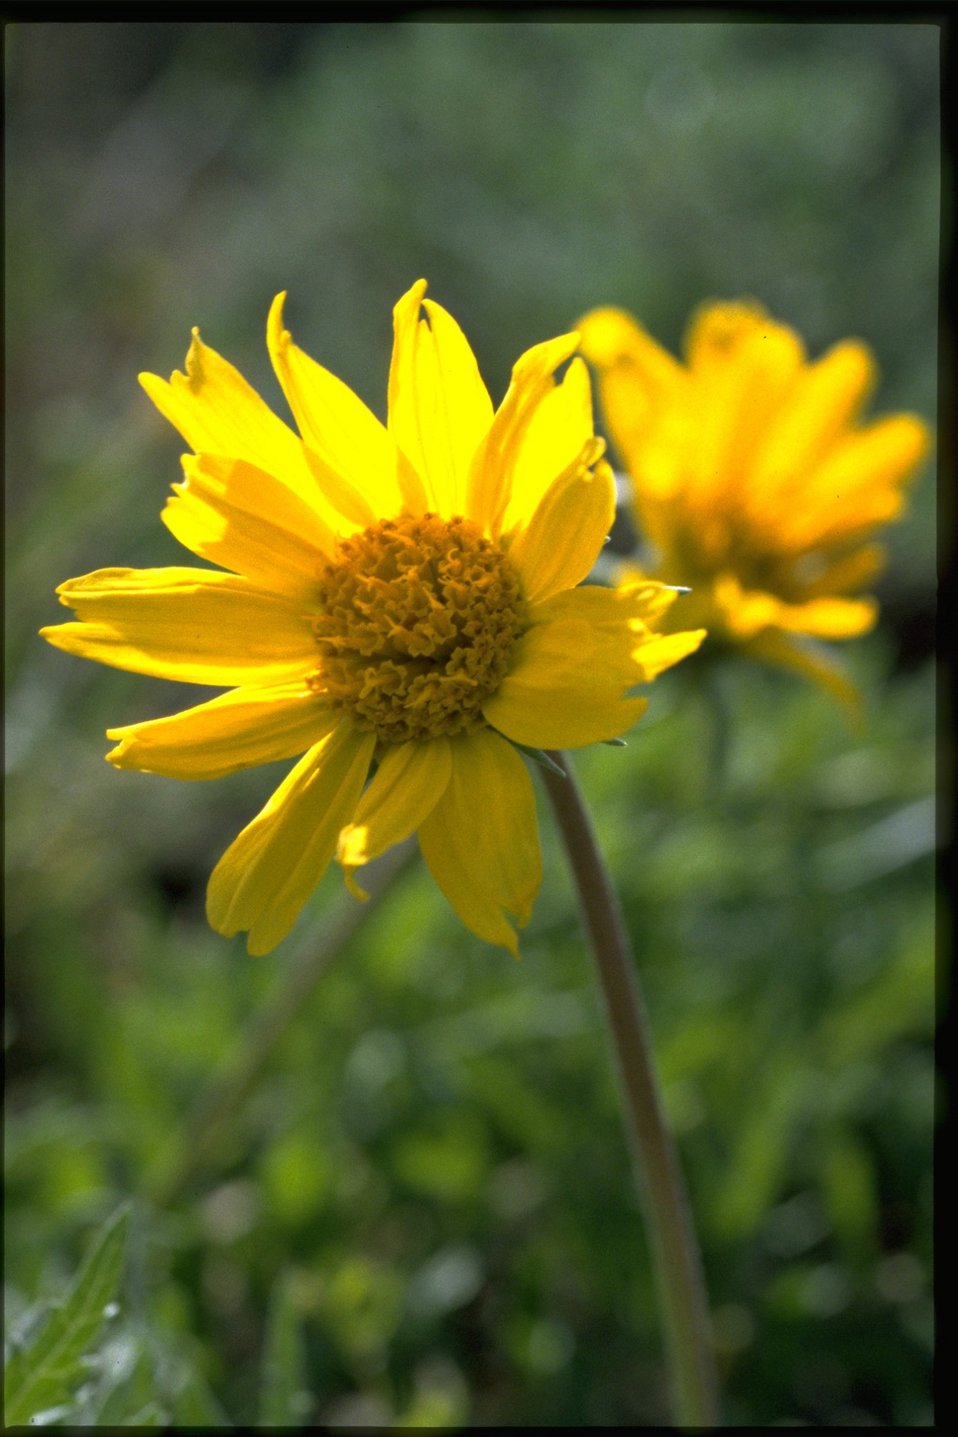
Closeup shot of Hooker's Balsamroot wildflower (Balsamorhiza Hookeri).